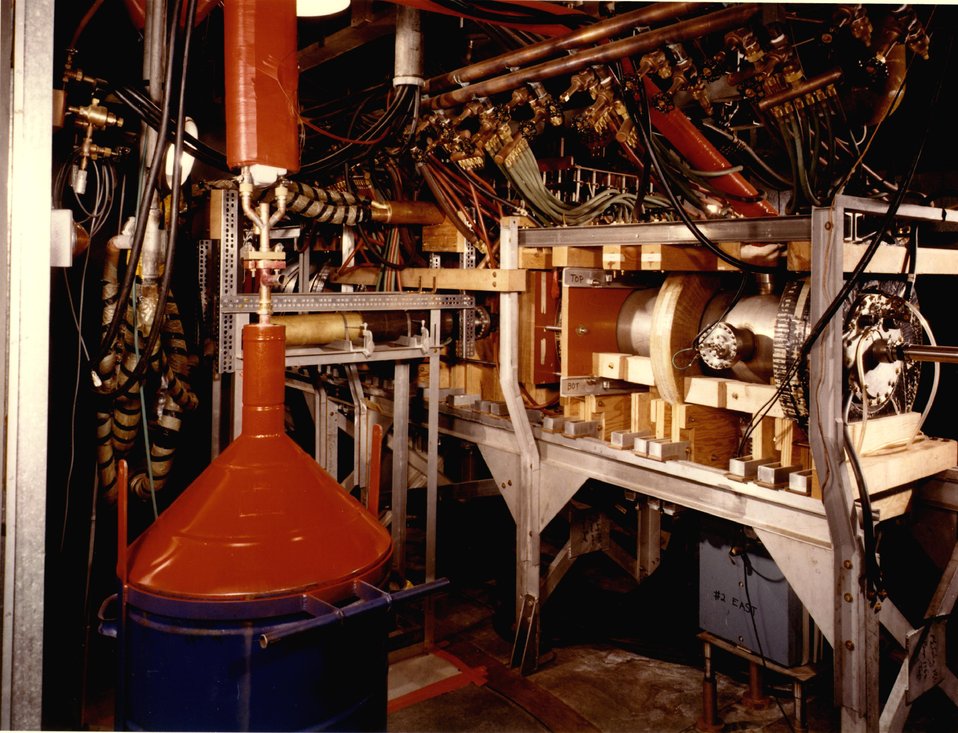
Table Top Mirror Machine.